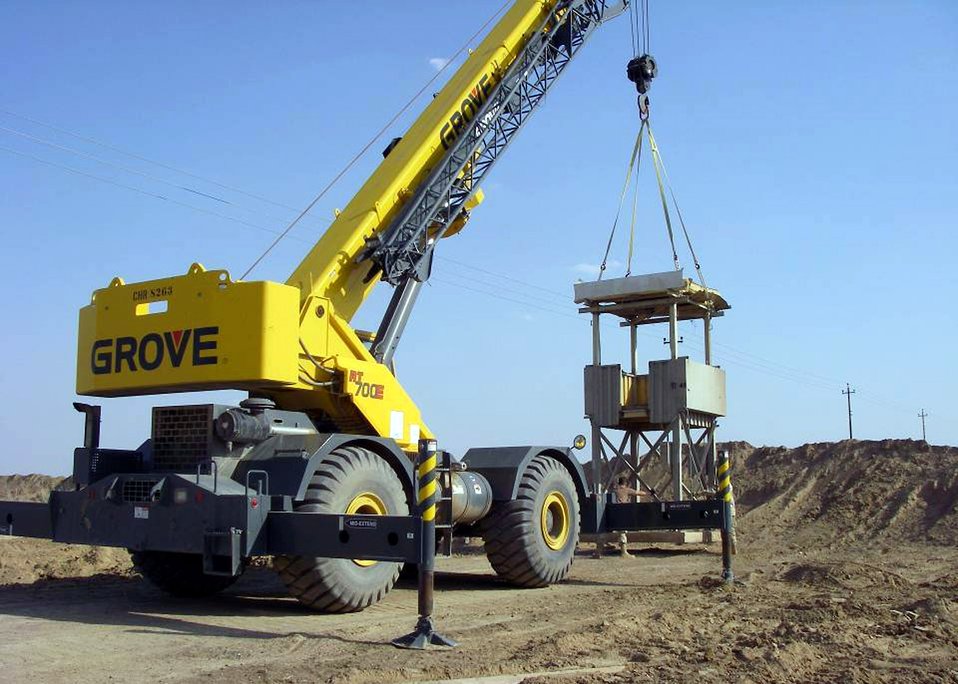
RED HORSE helps build combat brigade base in 45 days

Soldiers from the 92nd Engineer Battalion complete guard towers along Forward Operating Base Hammer's 14-kilometer, 10-foot-high perimeter berm in Iraq. 557th Expeditionary RED HORSE Airmen and Soldiers from the 92nd Engineer Battalion's